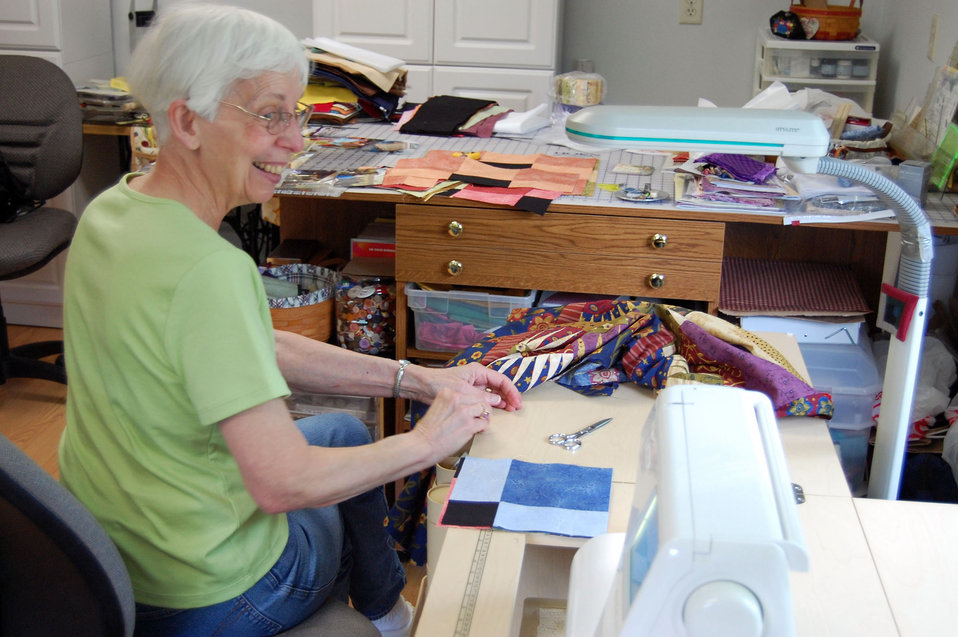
Quilts of Valor a comfort for complex wartime emotions

Helen Ruiz works at her sewing machine in her home studio June 19 in Dover, Del. Ms. Ruiz has created several custom quilts for the Quilts of Valor Foundation. Ms. Ruiz is a quilt topper who been quilting for more than 50 years.